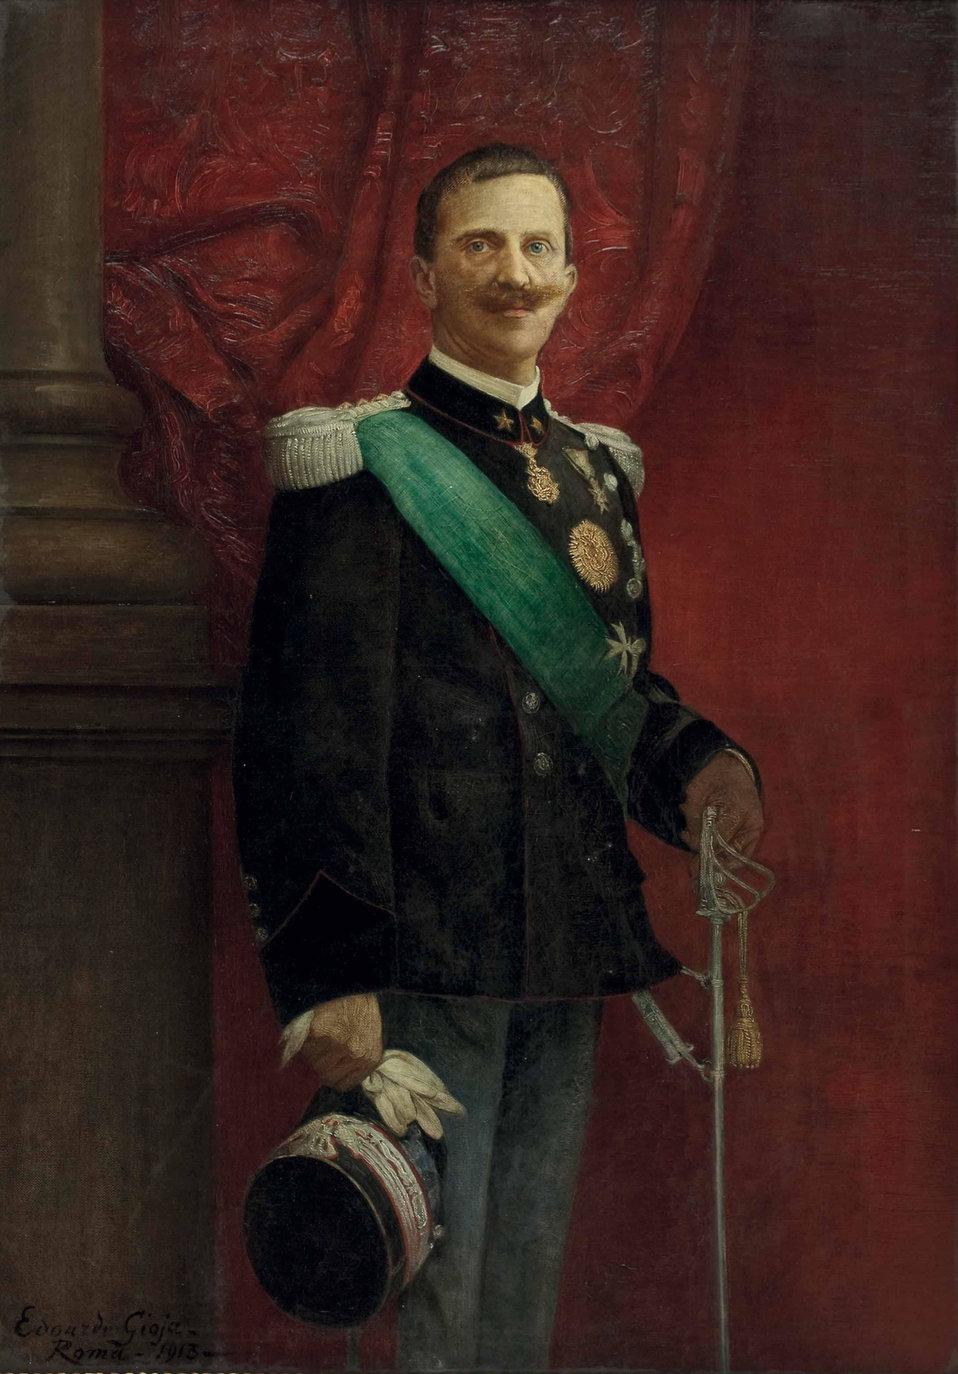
Eduardo Gioja Viktor Emanuel III 1913